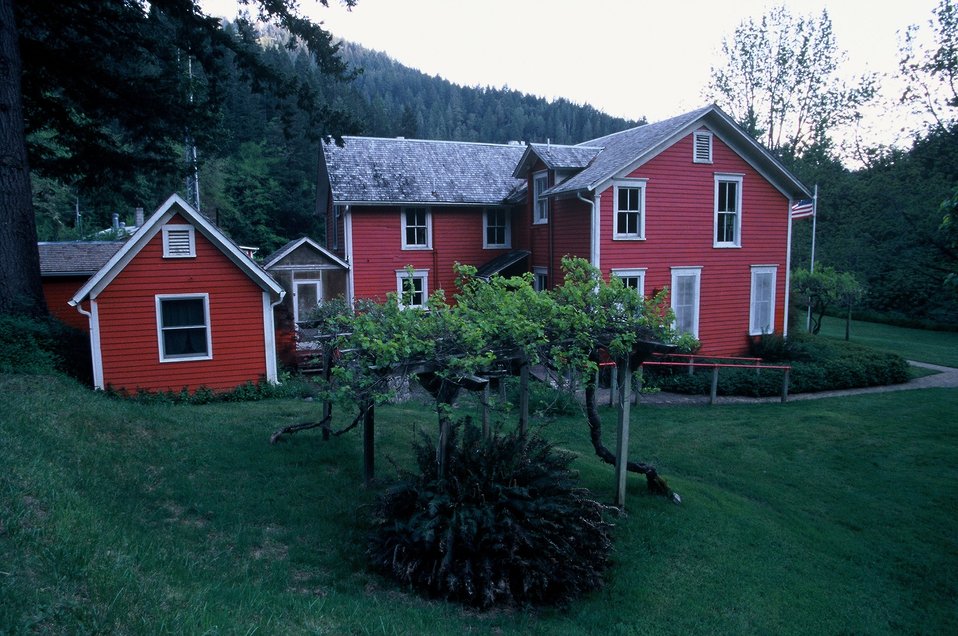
Wild section of the Rogue River from Grave Creek to Foster Bar May 19 to May 22.